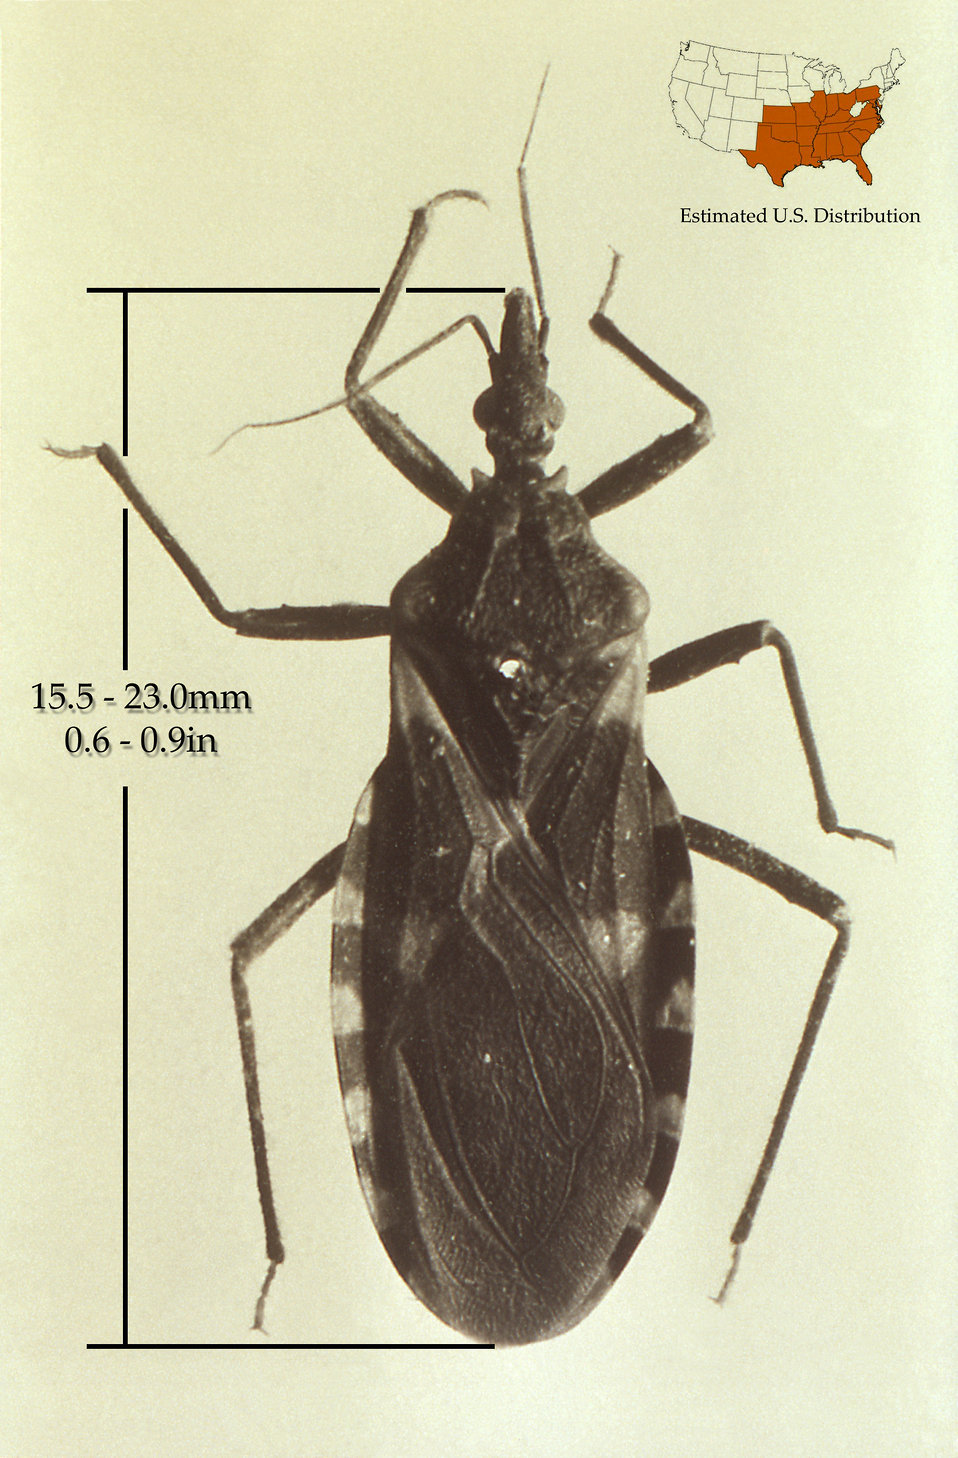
This image depicts a dorsal view of the Eastern bloodsucking conenose, or the Mexican bed bug, Triatoma sanguisuga, which is a Triatominae family member of 'kissing bugs'.